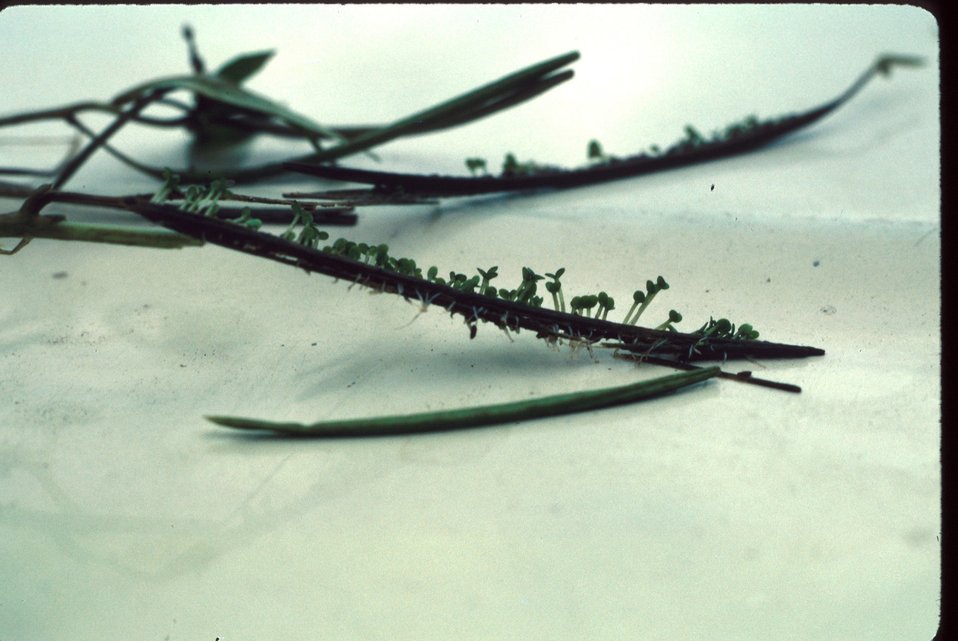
Epilobium Seeds germinating in the seed capsule Wildflower